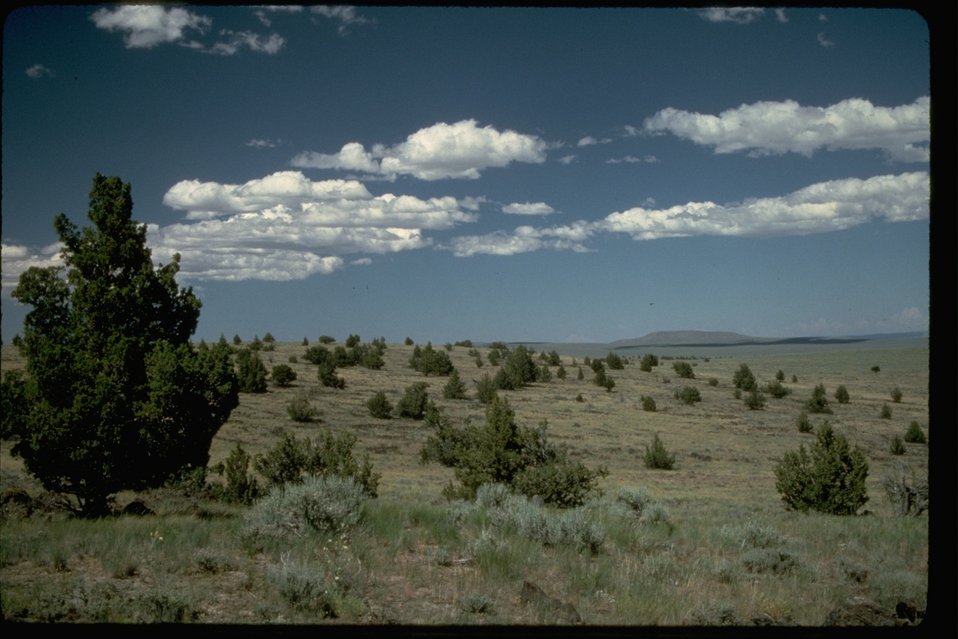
Large rangeland area in the Cedar Mountain Wilderness Study Area. WSA OR 3-47.